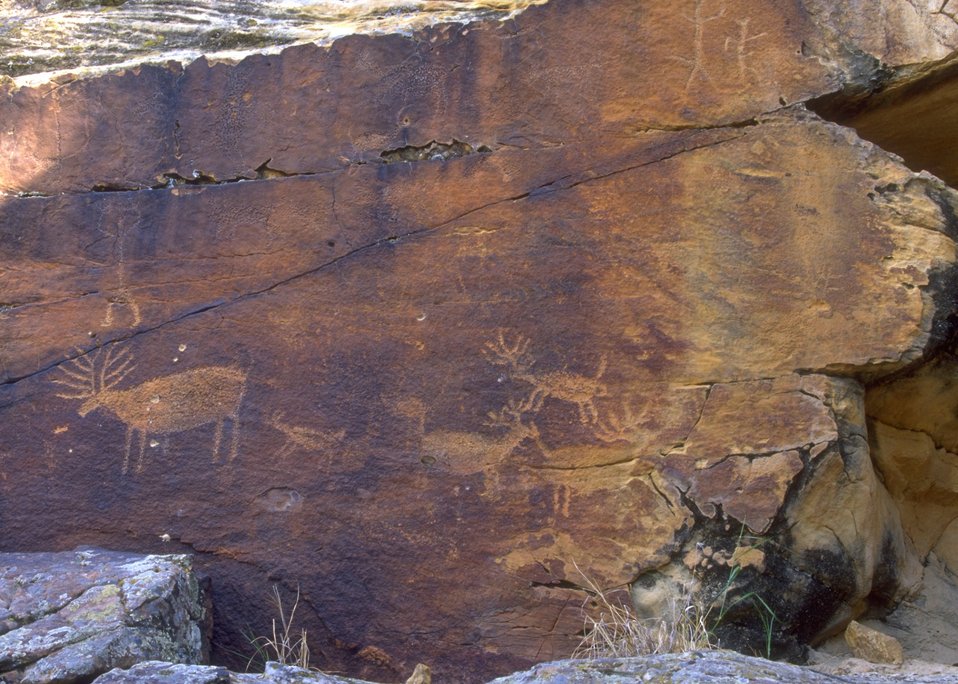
Petroglyph panel in Whoopup Canyon, Newcastle Field Office.